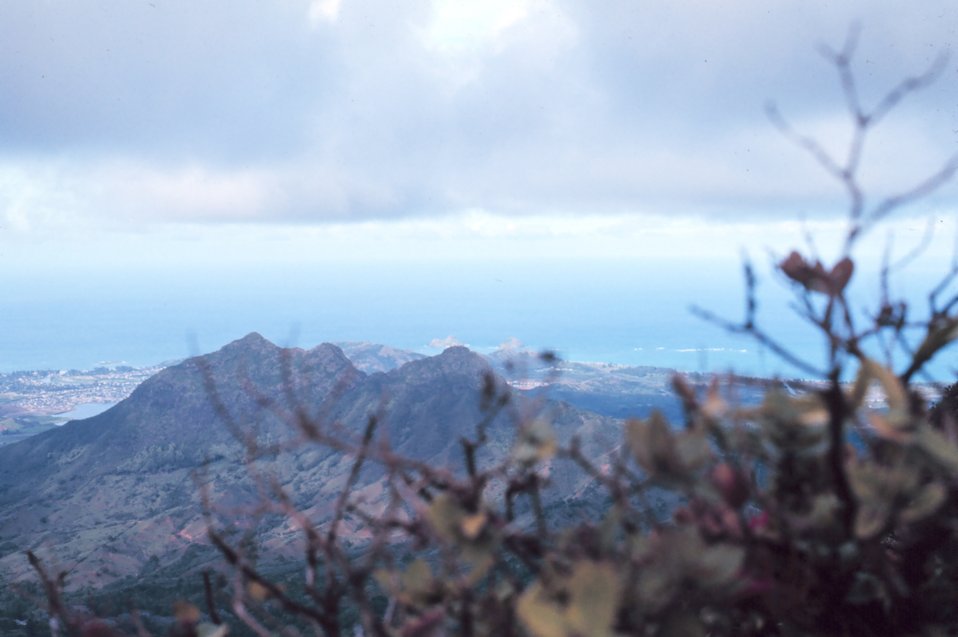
Looking down to east coast of Oahu